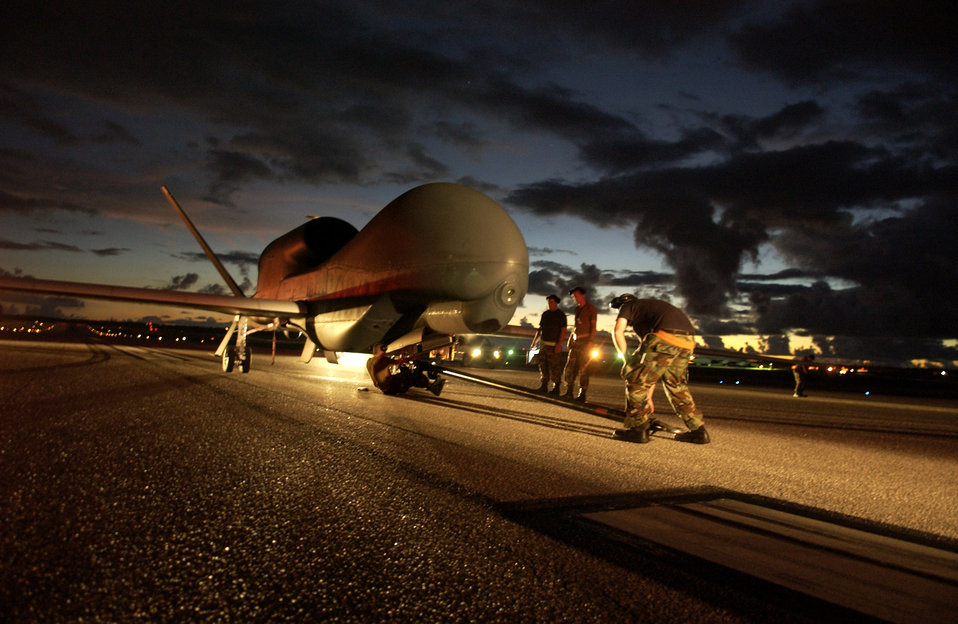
Day is done

A flightline ground crew prepares to tow a Global Hawk unmanned aircraft system to a secure hangar at Andersen Air Force Base, Guam. The UAS has a wingspan of 116 feet and is designed to cruise at extremely high altitudes.